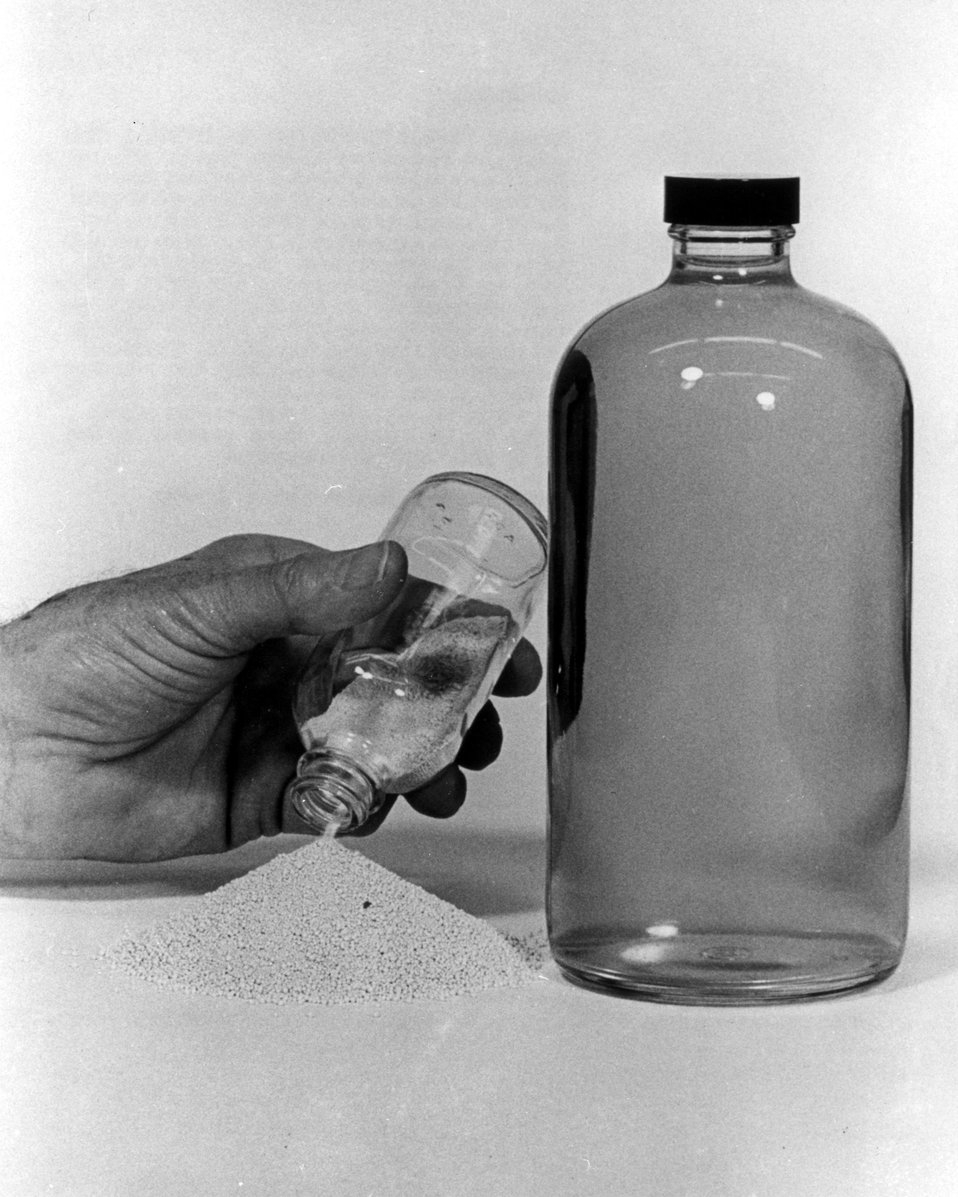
This small pile of course-sand-like granules represents the 10-to-1 volume reduction resulting from fluidized-bed calcining at the National Reactor Testing Station in Idaho of highly radioactive liquid wastes equivalent in quantity to the contents of the large bottle. Circa 1967.